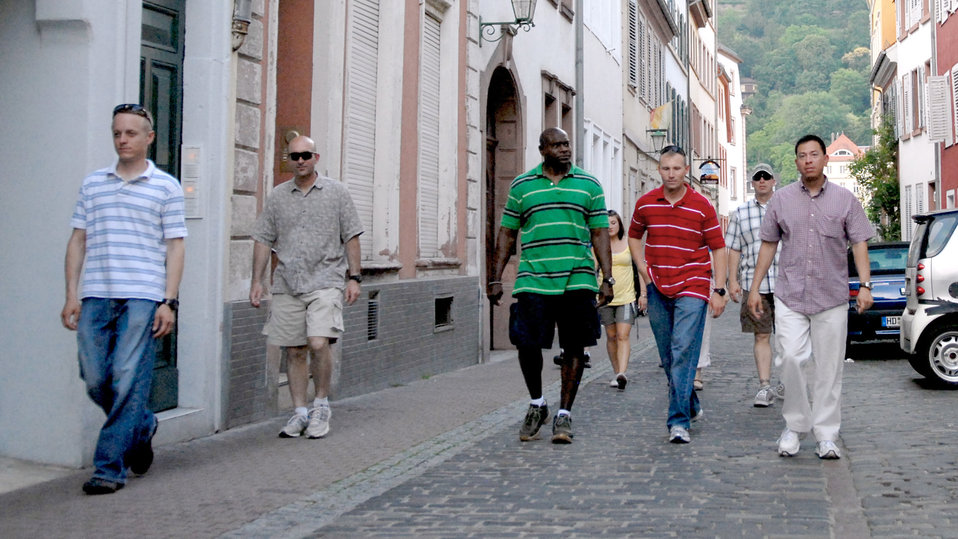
Delta flight

Members of Delta explosives ordnance disposal flight, from the 755th Air Expeditionary Squadron, walk the streets of Heidelberg, Germany, July 3, 2010, as part of their program at the Air Force Deployment Transition Center at nearby Ramstein Air Base. Airmen returning from combat deployments in security forces, convoy operations and EOD career fields will now stop at the DTC on their way home for a three-day program designed to prepare them to return to their families and everyday lives back home.